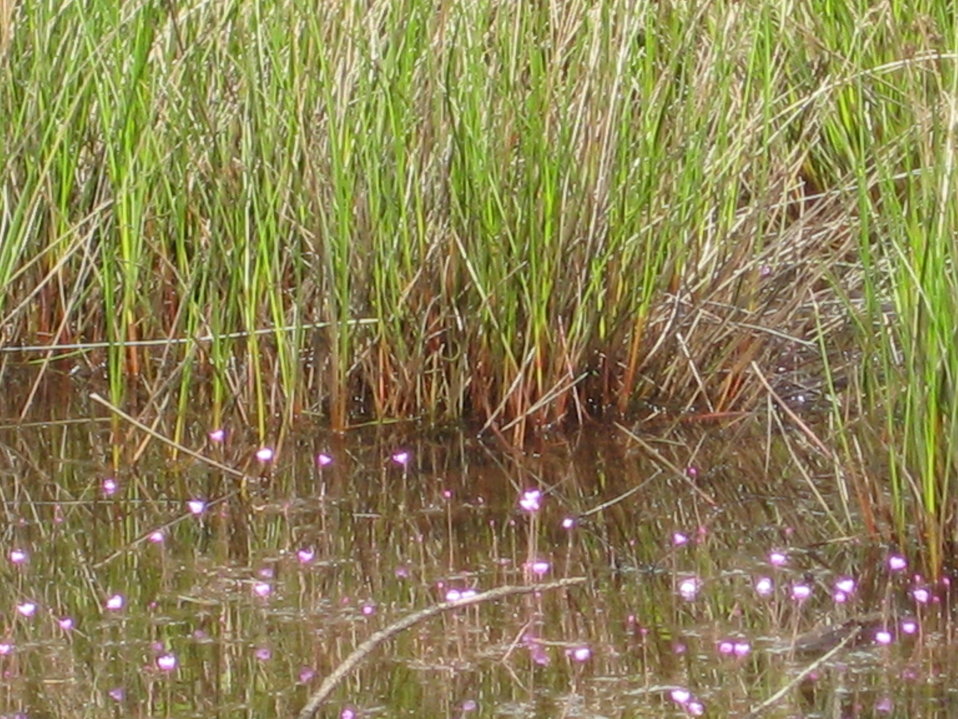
Old Fort Bayou Preserve bladderwort

Supported by the North American Wetlands Conservation Act.